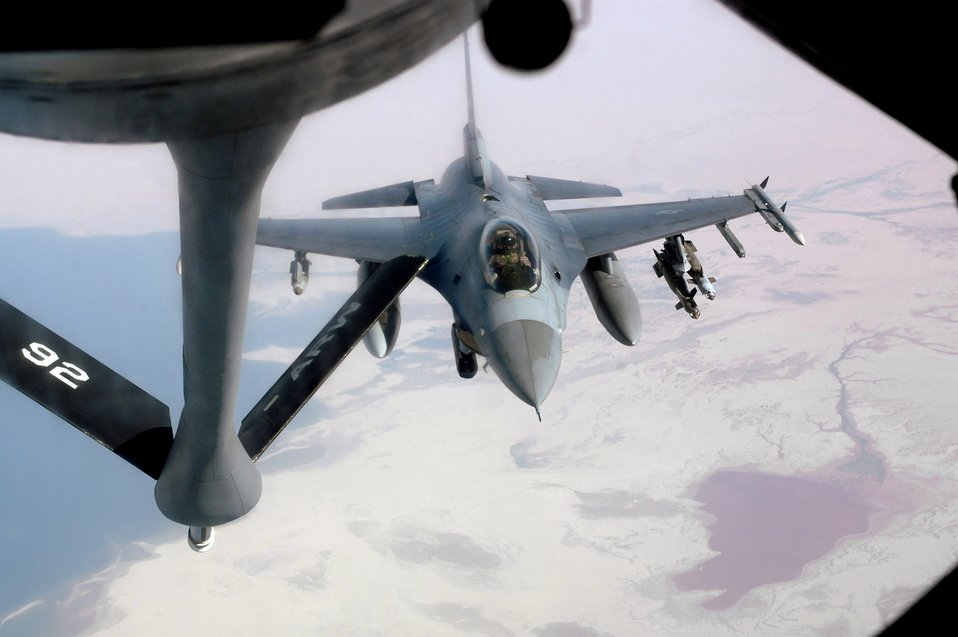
Pulling up to the pump

An F-16 Fighting Falcon approaches a KC-135 Stratotanker for refueling over central Iraq in support of Operation Iraqi Freedom May 19. The KC-135 is deployed from Fairchild Air Force Base, Wash., and the F-16 is deployed to Balad Air Base, Iraq, from Aviano AB, Italy. The F-16 Fighting Falcon is a compact, multi-role fighter aircraft. It can locate targets in all weather conditions and detect low flying aircraft in radar ground clutter. In an air-to-surface role, the F-16 can fly more than 500 miles, deliver its weapons with superior accuracy, defend itself against enemy aircraft, and return to its starting point.